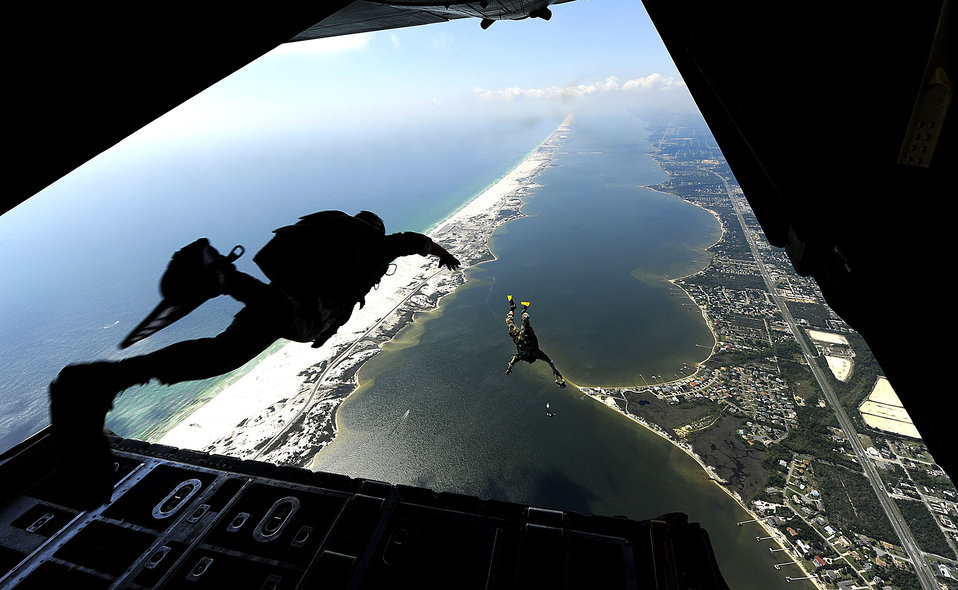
One giant leap...

U.S. Air Force members from the Air Force Special Operations Command's 23rd Special Tactics Squadron at Hurlburt Field, Fla., jump out of the back of a C-130 Hercules. The Airmen are practicing combat operations in the Santa Rosa Sound.